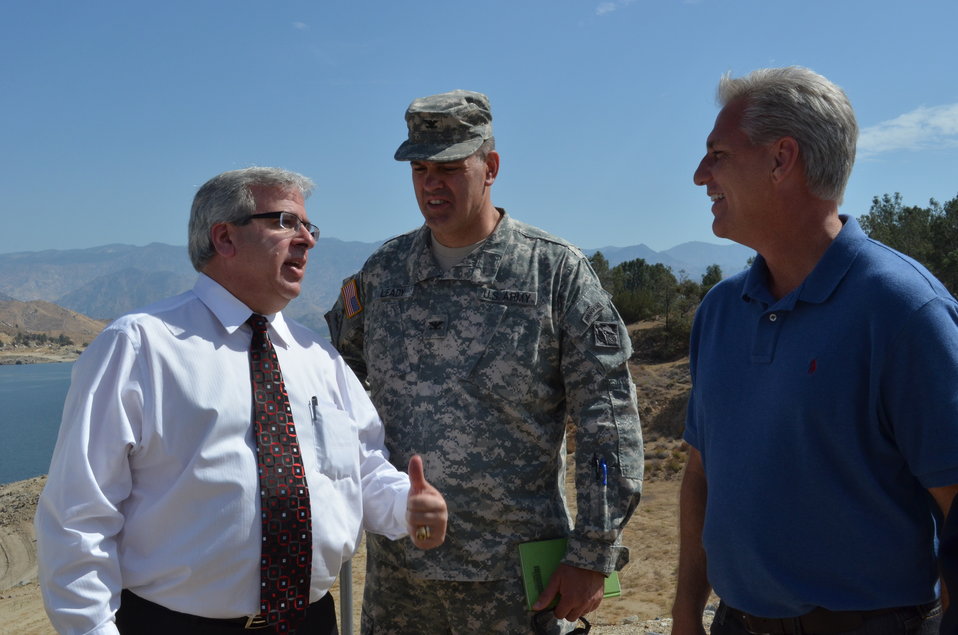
Congressman, Corps officials tour Isabella Lake

Joe Calcara (left), director of programs for the U.S. Army Corps of Engineers South Pacific Division, speaks with U.S. Rep. Kevin McCarthy (right) and Col. Bill Leady, commander of the Corps’ Sacramento District, during a visit to Isabella Lake, Calif., Aug. 16, 2012. Calcara, McCarthy and Leady toured the Isabella Lake Dams and discussed the Corps’ tentatively selected plan to modernize the dams, which are currently among the highest risk dams in the Corps’ inventory.